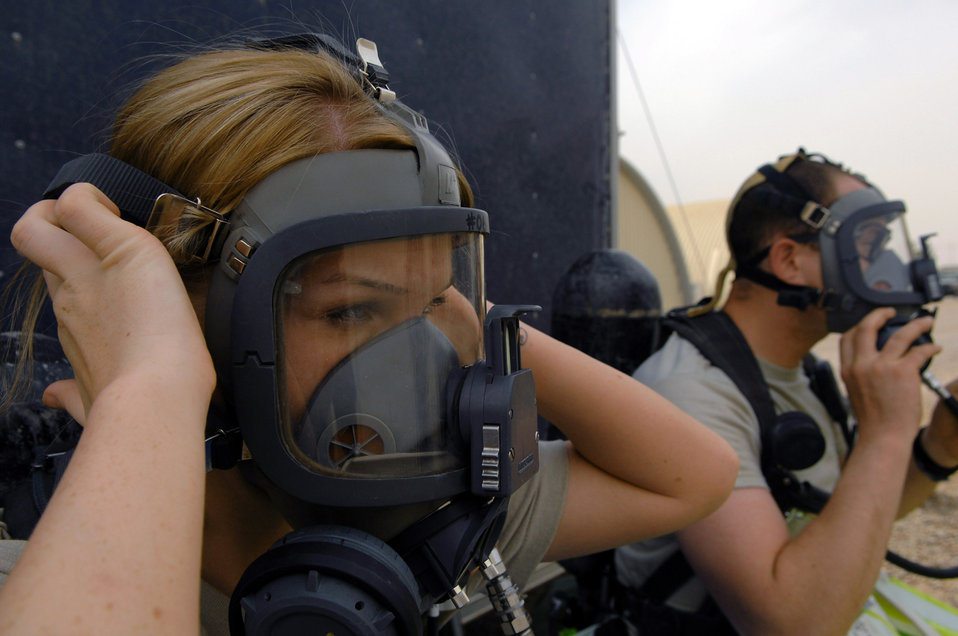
Breathe in, breathe out

Senior Airman Krista McVicar tightens her oxygen mask during an emergency management drill March 26 at Balad Air Base, Iraq. Emergency management Airmen conduct battle drills to keep skills sharp. Airman McVicar is with the 332nd Expeditionary Civil Engineer Squadron.